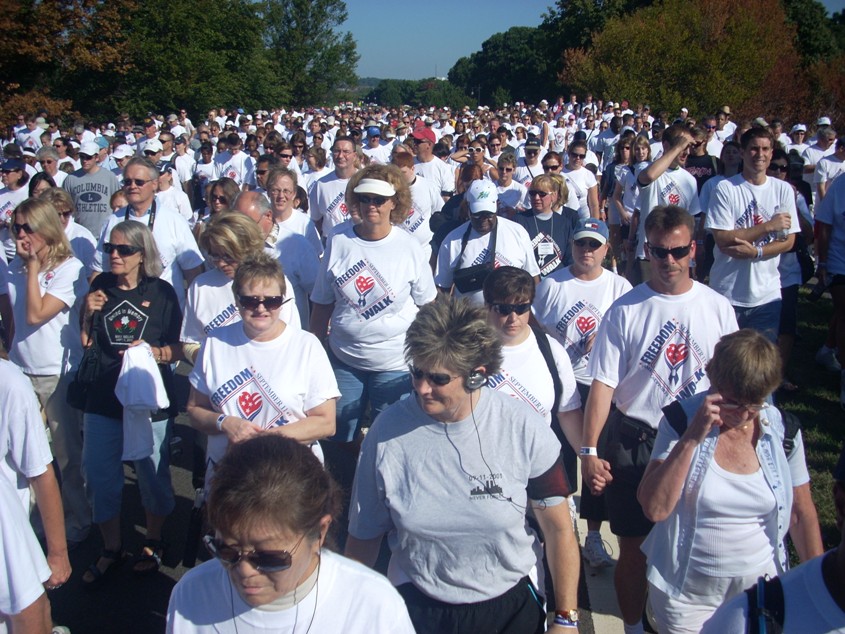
Thousands walk for freedom in Washington D.C.

Thousands of people participate in the Fourth Annual America Supports You Freedom Walk Sept. 7, in Washington, D.C. This event is one of 330 such events designed to remember the Sept. 11, 2001, terrorist attacks on the United States.